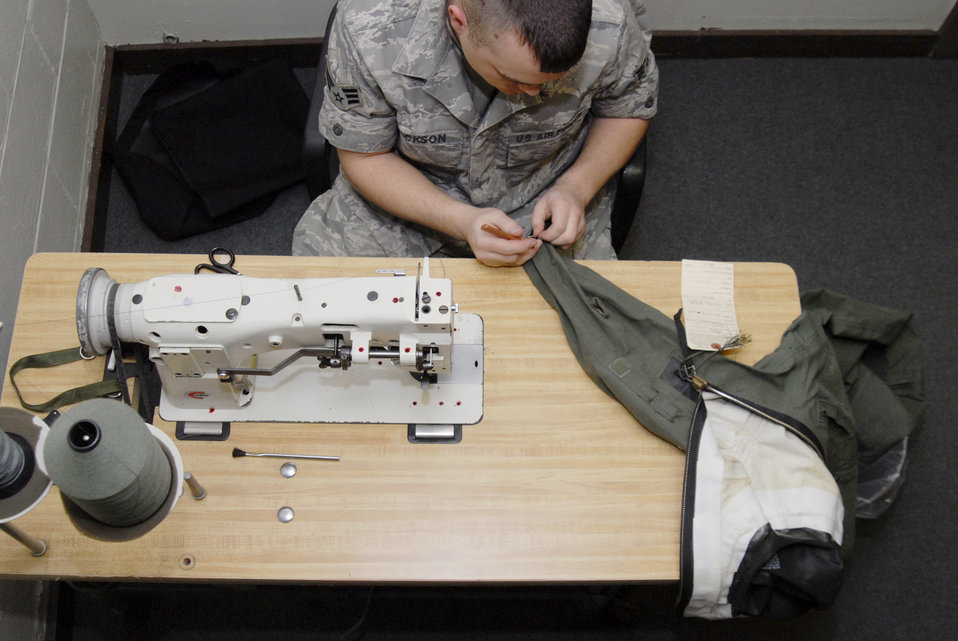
Kunsan Airmen protect lives

Senior Airman Michael Jackson uses a sewing machine to replace the wrist seals on an anti-exposure flyers overall April 7, 2010, at Kunsan Air Base, South Korea. Airman Tanner is an aircrew flight equipment craftsman assigned to the 8th Operations Support Squadron.